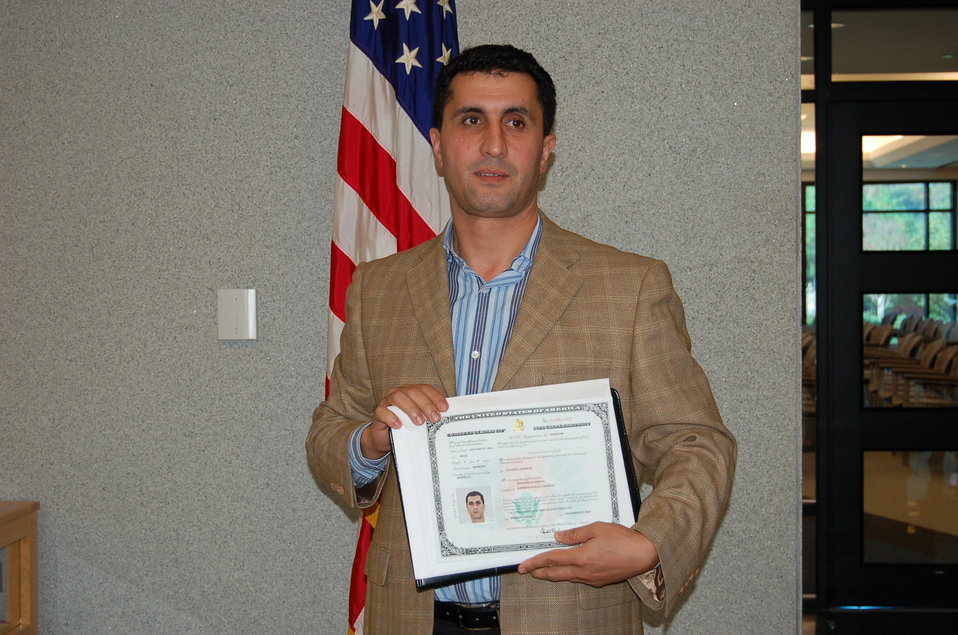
New Citizens